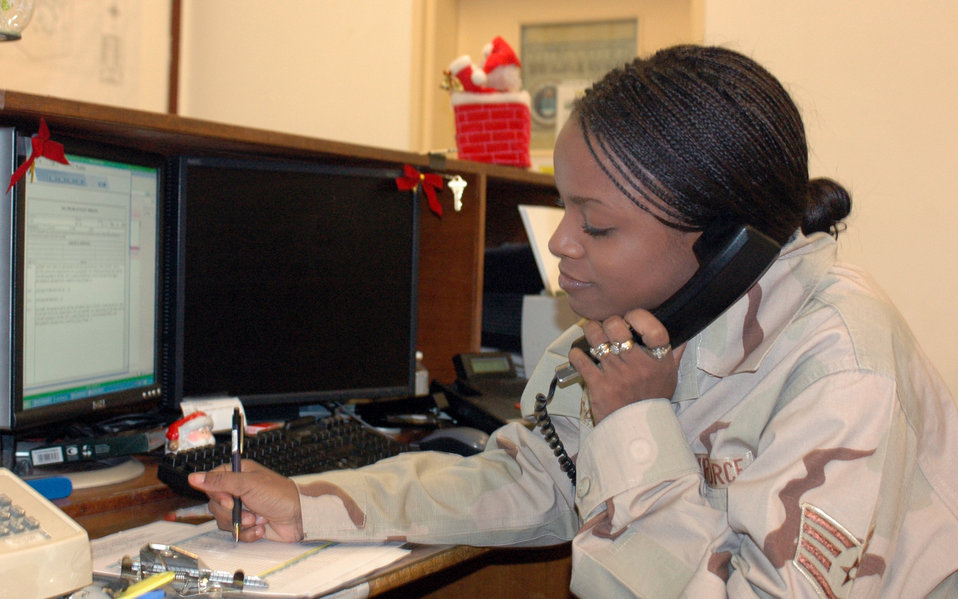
379th Airfield Management keeps aircraft, personnel safe

Staff Sgt. Tiffany Jones-Bolling receives an aircraft parking location change following an aircraft tow. Sergeant Jones-Bolling is an airfield management operations supervisor assigned to the 379th Expeditionary Operations Support Squadron and deployed from Luke Air Force Base, Ariz.